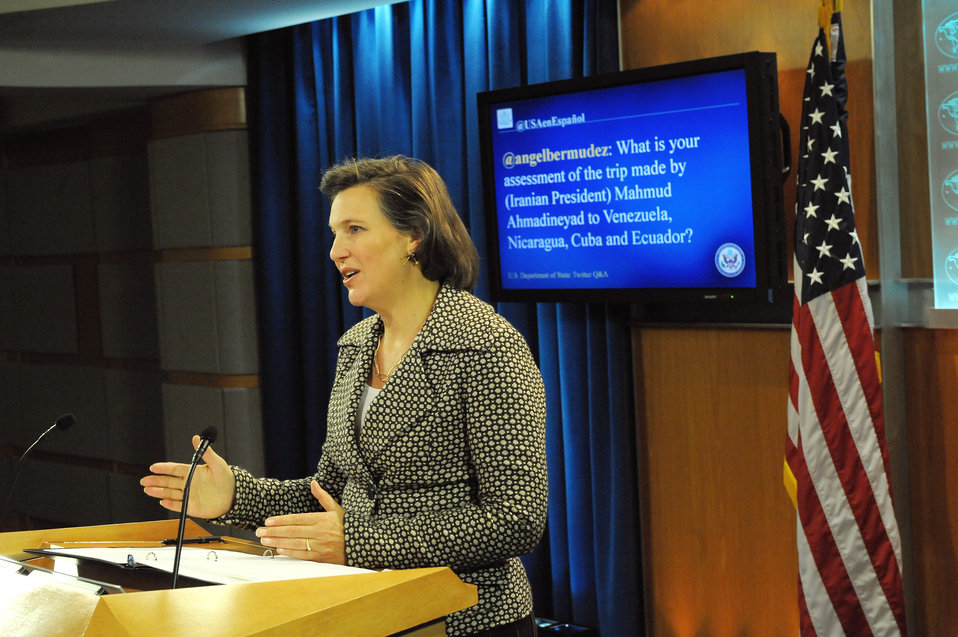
Spokesperson Nuland Responds to a Question from @USAenEspanol

Victoria Nuland, Spokesperson for the U.S. Department of State, answers a question selected from the Department’s official Spanish Twitter feed, @USAenEspanol, on January 20, 2012.